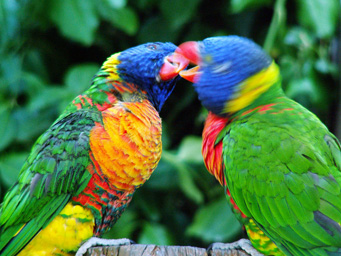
Rainbow Lorikeets (Trichoglossus haematodus).